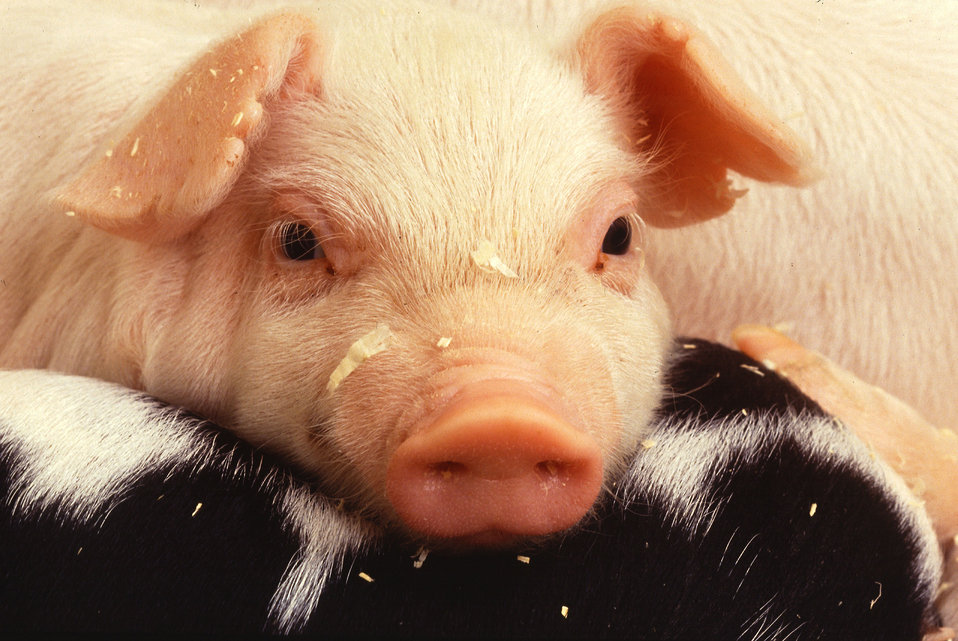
A baby piglet rests his chin on another piglet in the litter.